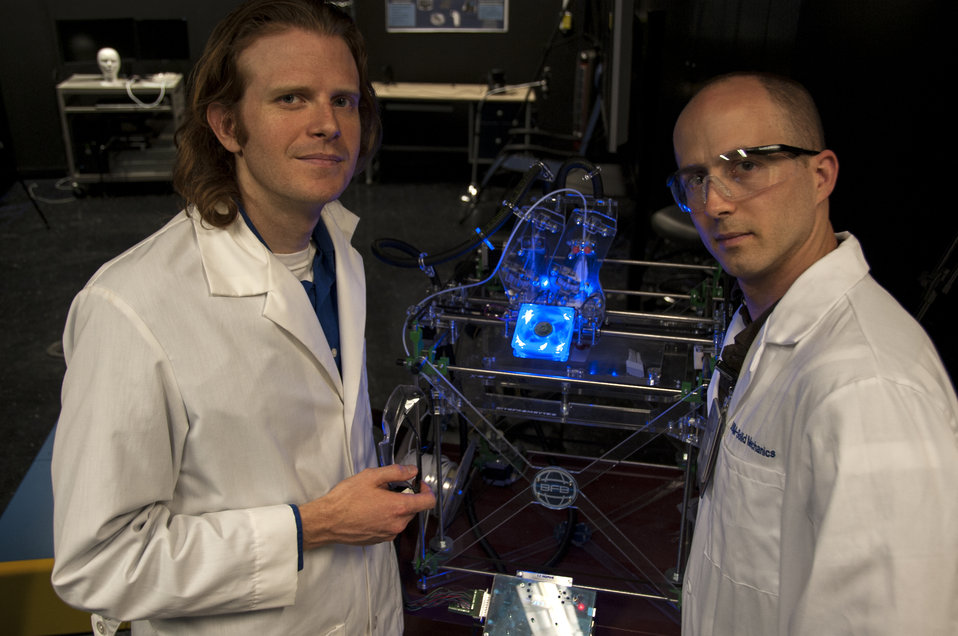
3-D Printing at FDA (8263)

Research engineers James Coburn (left) and Matthew DiPrima use this 3-D printer in their work at FDA. 3-D printing—the process of making a three-dimensional solid object of virtually any shape from a digital model—is spurring innovation in manufacturing, dramatically reducing the time required to design new products and allowing designs to be built that were not possible before. At FDA, we’re using it to expand both our research and our review of new and innovative medical products. To learn more, read this FDA Voice blog post:

• FDA Goes 3-D